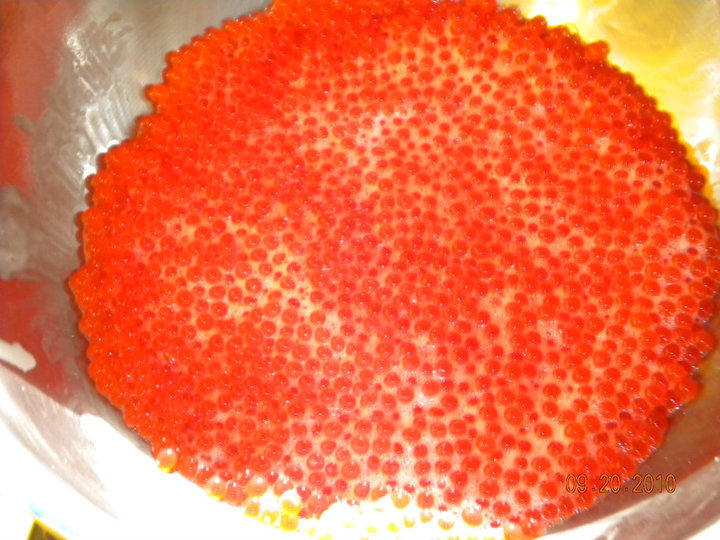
Fertilized Fall Tule Chinook eggs - Spring Creek NFH

Fertilized Fall Tule Chinook eggs, before the saline solution is added.